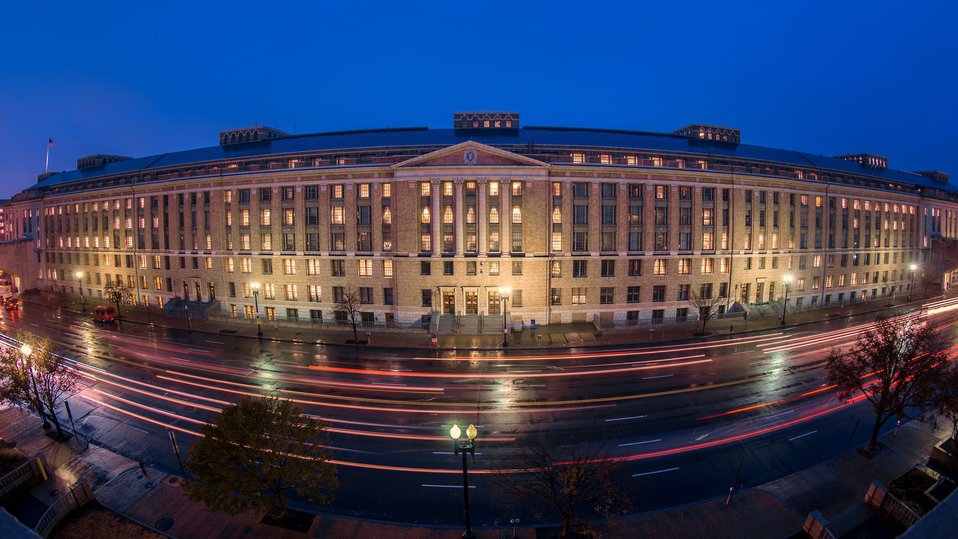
Semi-fisheye view of the U.S. Department of Agriculture (USDA), South Building at 1400 Independence Ave. in Washington, D.C. on Tuesday, Nov. 26, 2013. The USDA South Building was built in phases between 1930 and 1936 to house offices and laboratories. Archways were installed in 1936 to crossover Independence Avenue to the Jamie L. Whitten building, USDA’s main administration building. The modernization of USDA’s South Building began on September 21, 1998, with planned completion in 2015. The modernization process will take place in eight phases will house more than 6,800 personnel upon completion.